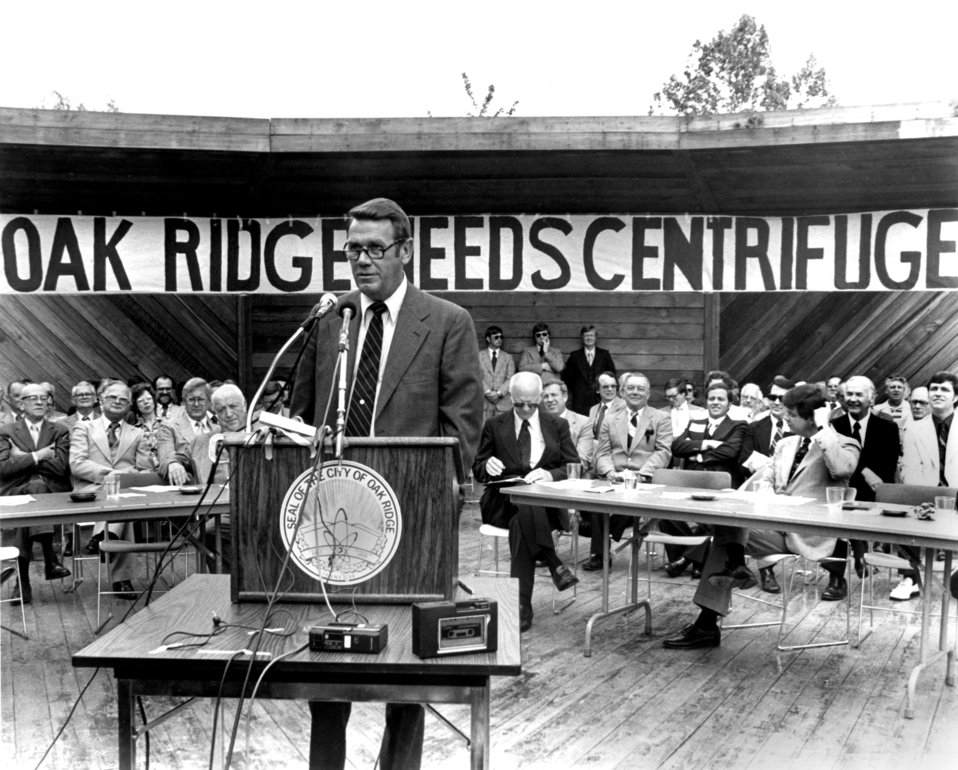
Centrifuge Rally Civic Center in Oak Ridge

77-219-17 DOE photo by Frank Hoffman

Centrifuge Rally Civic Center in Oak Ridge Tennessee 4-30-1977